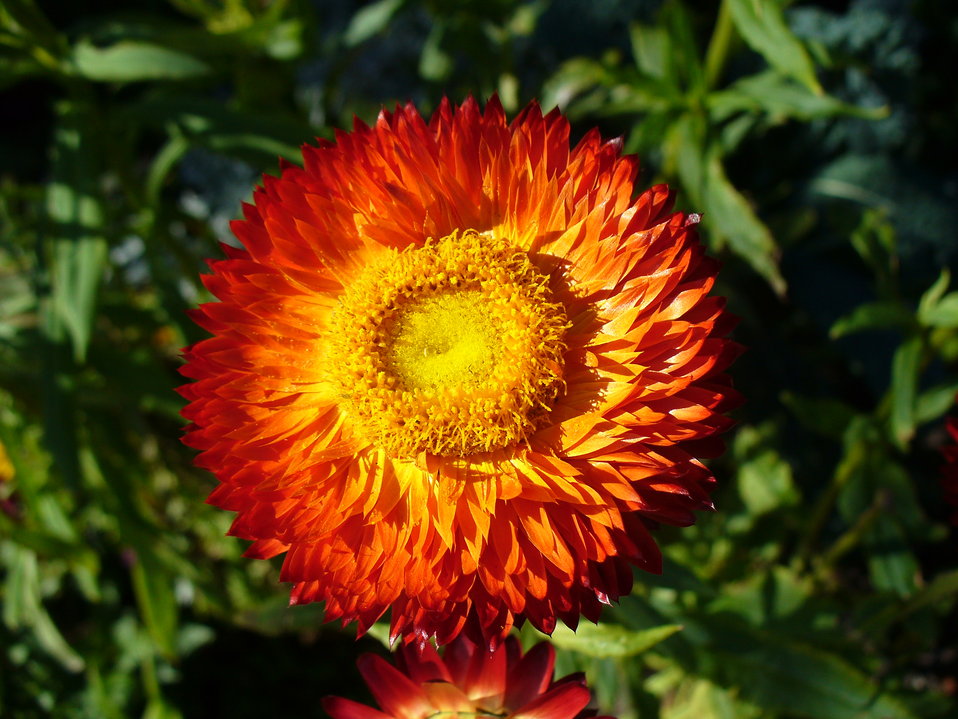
I am the originator of this photo. I hold the copyright. I release it to the public domain. This photo depicts a cultivar of Xerochrysum bracteatum.